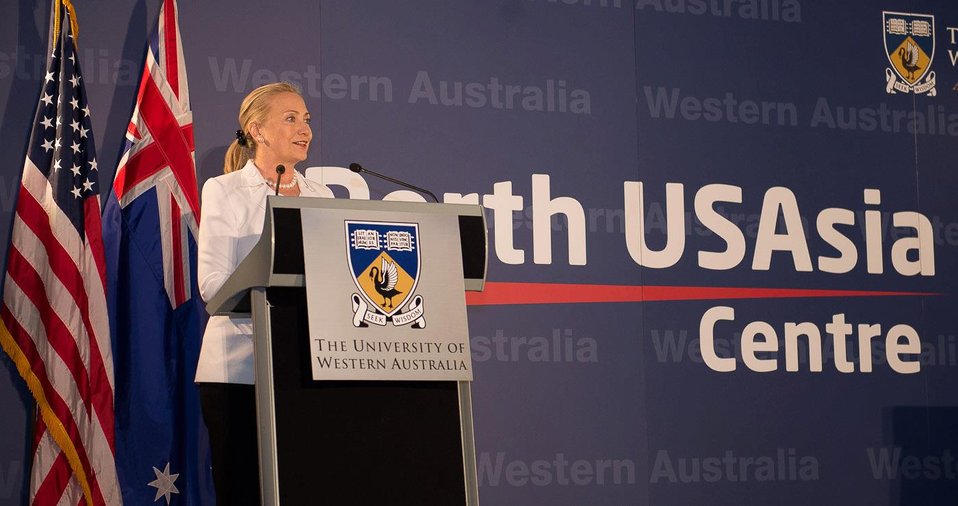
Secretary Clinton Delivers Remarks at the Launch of the Perth USAsia Centre

U.S. Secretary of State Hillary Rodham Clinton delivers remarks at the launch of the Perth USAsia Centre in Perth, Australia, November 13, 2012. Also pictured is U.S. Ambassador to Australia Jeff Bleich. [U.S. Embassy in Canberra, Australia photo by Travis Longmore/ Public Domain]